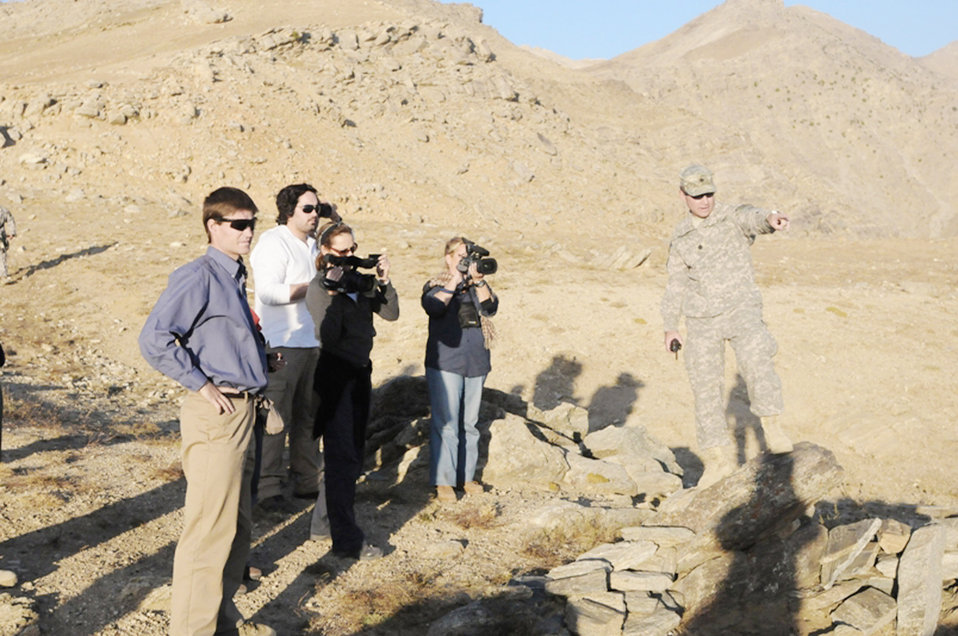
Panjshir Provincial Reconstruction Team helps Afghans

Lt. Col. Eric Hommel (right) explains the historical significance of the Daraband Pass to several NATO journalists with Jeremy Lewis (left) Oct. 15, 2009, in the Panjshir Province, Afghanistan. The U.S. military presence is vital to providing the resources to maintain security in the valley enabling civilian organizations to spearhead development efforts. Colonel Hommel is the Panjshir Provincial Reconstruction Team commander. Mr. Lewis is the U.S. Aid for International Development representative to the PRT.